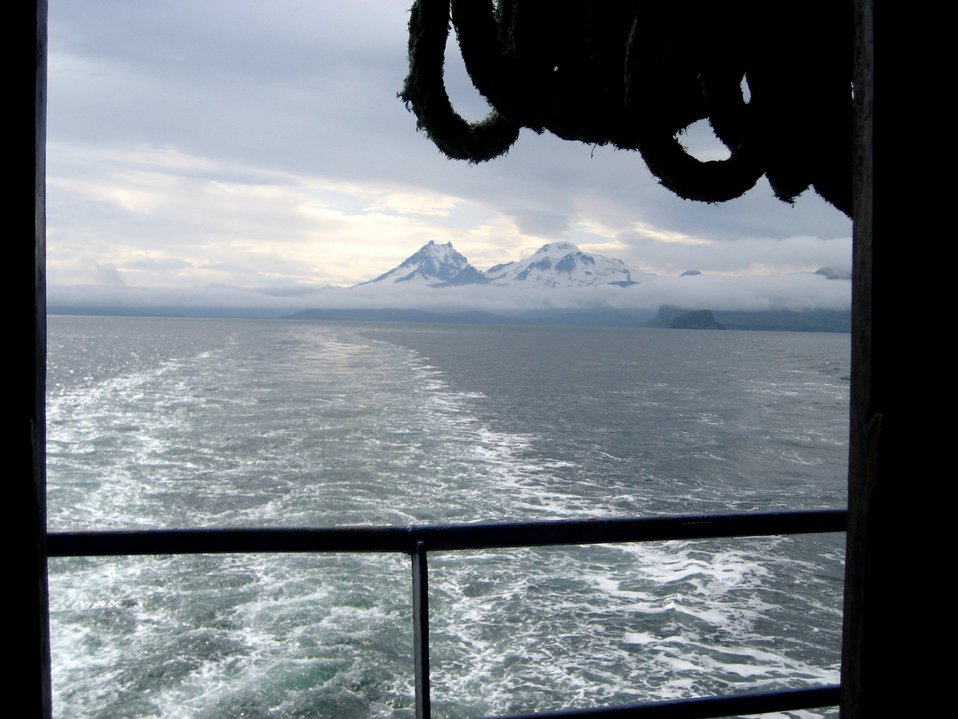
Isanotski (left) and Roundtop Volcanoes